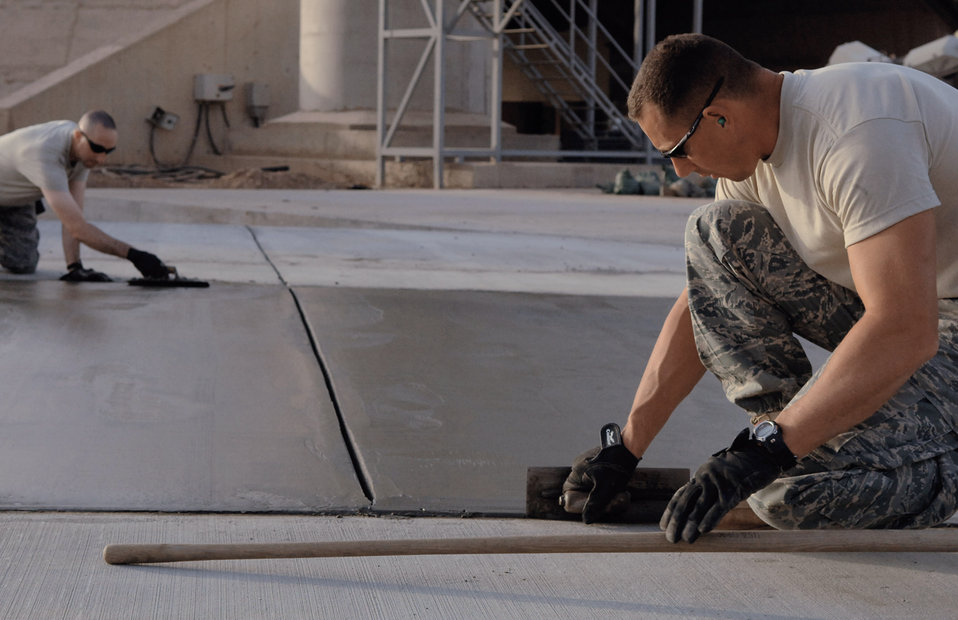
'Dirt Boyz' pave way for aircraft, Airmen

Tech. Sgt. Adam Brothers (right) and Master Sgt. Brian Nolan edge a new pad May 13 at Balad Air Base, Iraq. Sergeant Brothers is a 332nd Expeditionary Civil Engineer Squadron heavy equipment operator deployed from Patrick Air Force Base, Fla., and Sergeant Nolan is the 332nd ECES heavy repair noncommissioned officer in charge deployed from Ellsworth AFB, S.D.